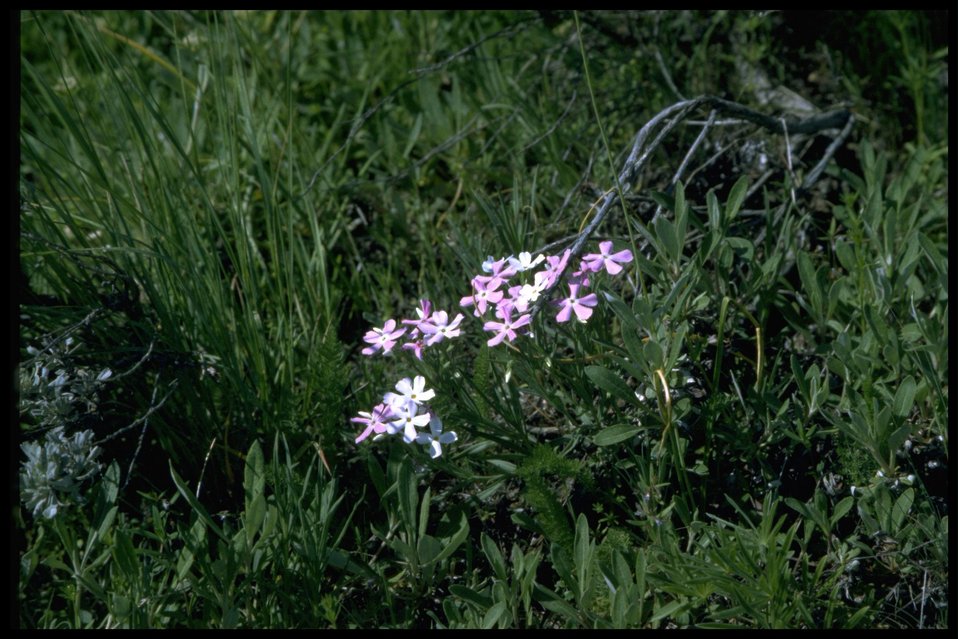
Medium shot of Long-leaf phlox wildflower.